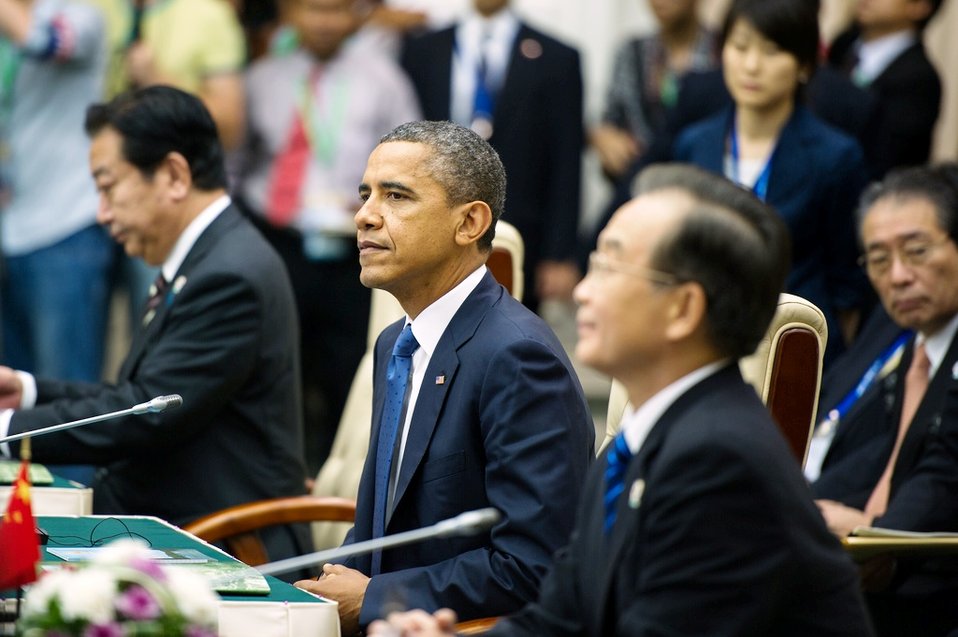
President Obama Participates in the East Asia Summit Plenary Session

U.S. President Barack Obama participates in the East Asia Summit Plenary Session in Phnom Penh, Cambodia, November 20, 2012. President Obama is the first U.S. President to visit Cambodia.